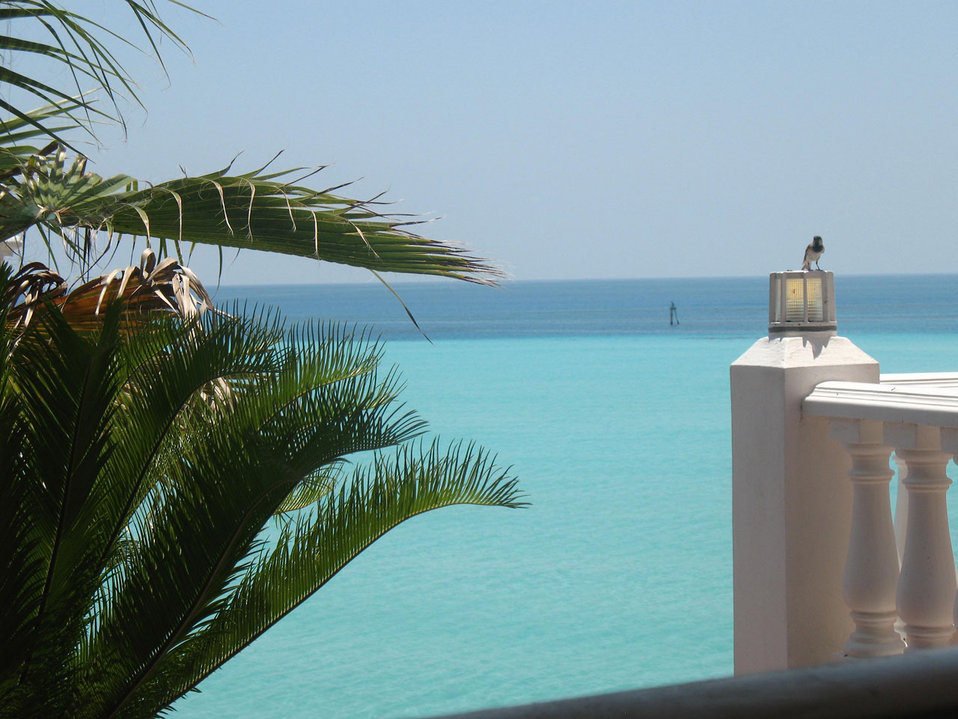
Ocean view

Beautiful ocean view with exotic bird.